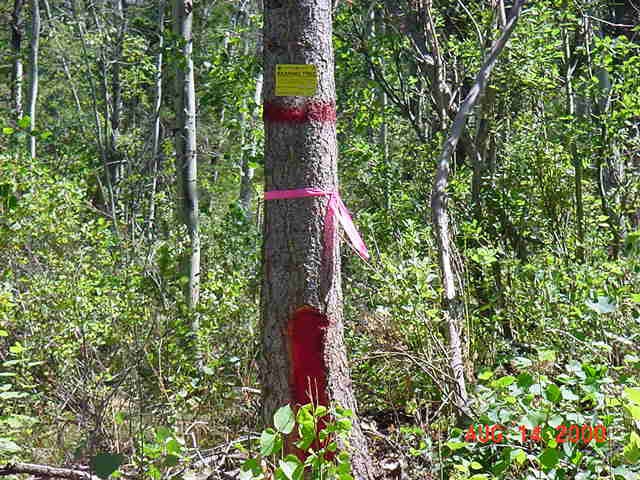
Cadastral Surveys Idaho Bureau of Land Management